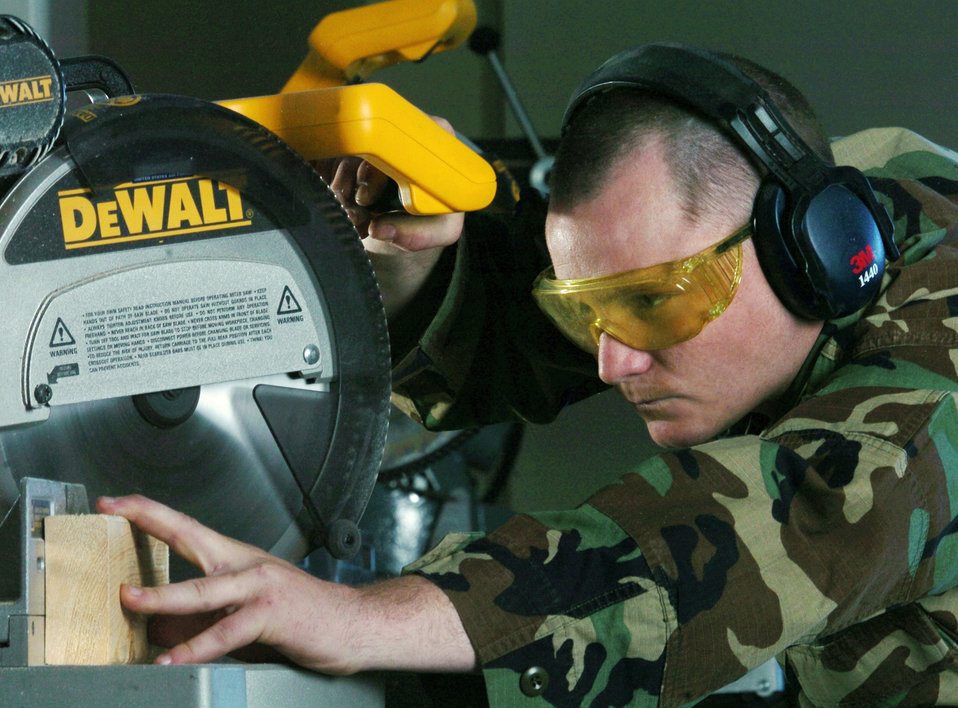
Can I cut in?

YOKOTA AIR BASE, Japan -- Airman 1st Class James Kennedy cuts a piece of wood at a 374th Civil Engineer Squadron facility here. The squadron's Airmen build, maintain and repair facilities.